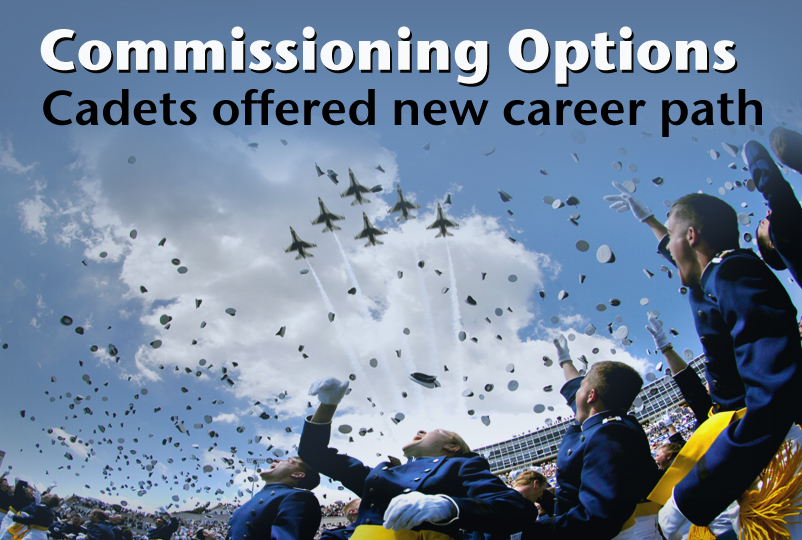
Air Force officials offer cross commissioning opportunities